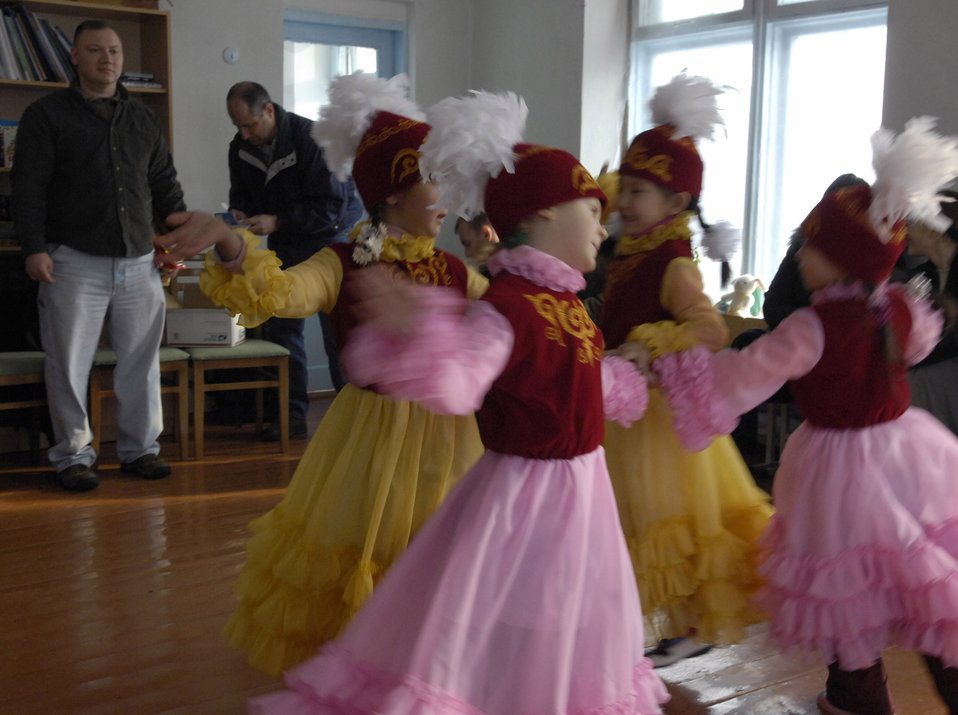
School dance

Children from the Vasilievka kindergarten class, dressed in traditional Kyrgyz garb, performed some local dances and sang songs to thank Senior Master Sgt. Reynold Albright (left) and other Airmen for their volunteer efforts at the school Jan. 24 at Vasilievka, Kyrgyzstan. Sergeant Albright is the 376th Expeditionary Operations Group superintendent and volunteers from Manas Air Base, Kyrgyzstan, fixed floors, painted and installed a hot water heater for the school. The 376th EOG also raised $2,000 for a fence to be built around a school to make a children's play area safer.